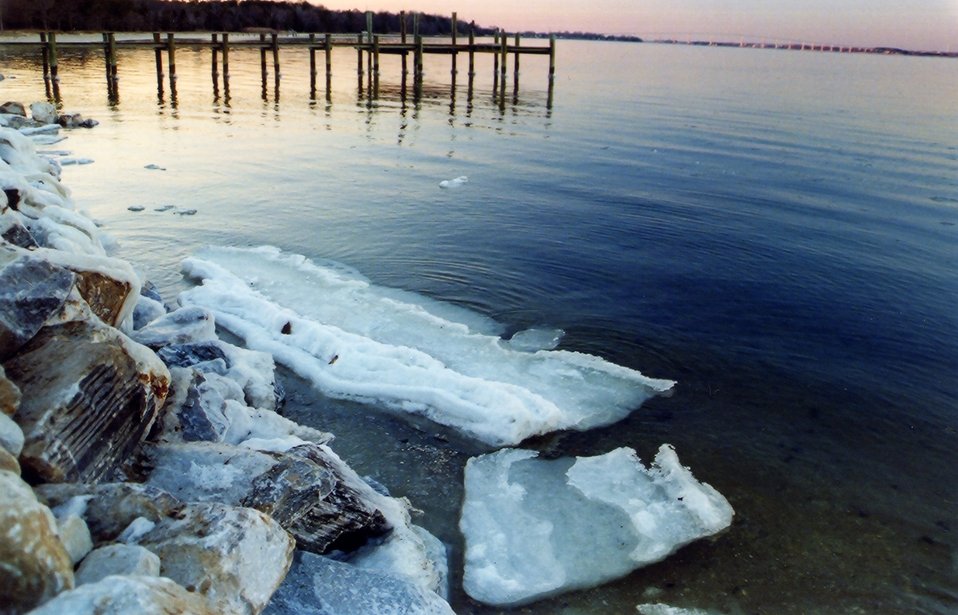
Patuxent River version of icebergs.